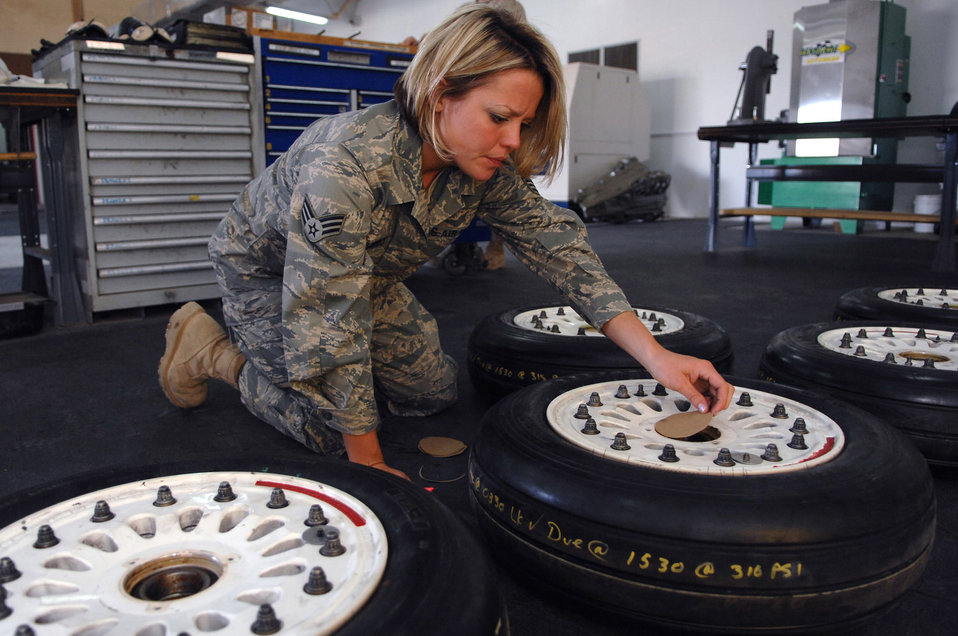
The wheels on the plane

Senior Airman Melissa Gallardo places dust covers over the retaining rings on an F-16 Fighting Falcon's main landing gear wheel at Balad Air Base. Changing an aircraft's tires frequently ensures the aircraft has the required traction needed during landings. Airman Gallardo is a 332nd Expeditionary Maintenance Squadron crew chief deployed from the Montana Air National Guard.